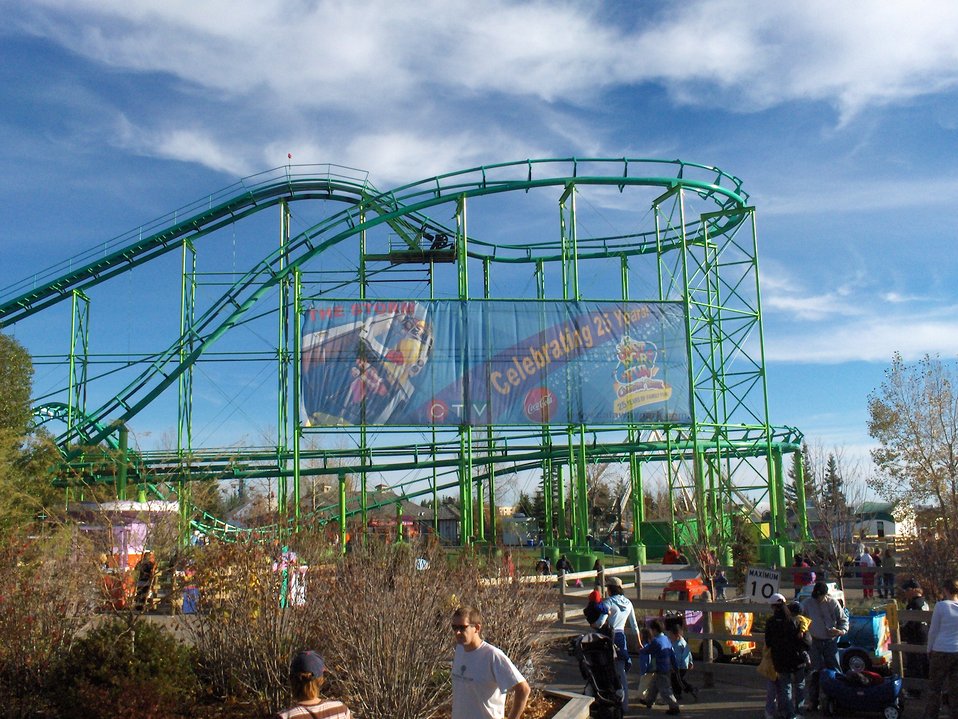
Calaway Park (Calgary, Canada) - A banner of Calaway celebrating it's 25th Anniversary with the new ride 'Storm,' posted on Vortex's (the roller coaster) side railings. Other rides are shown, including Swirly Twirl (left), Super Trucks (right) and Ocean Motion in the background. The Calaway Cafe is shown behind vortex (gray-roofed building), and the Guest Services booth to the right of it (smaller white building).